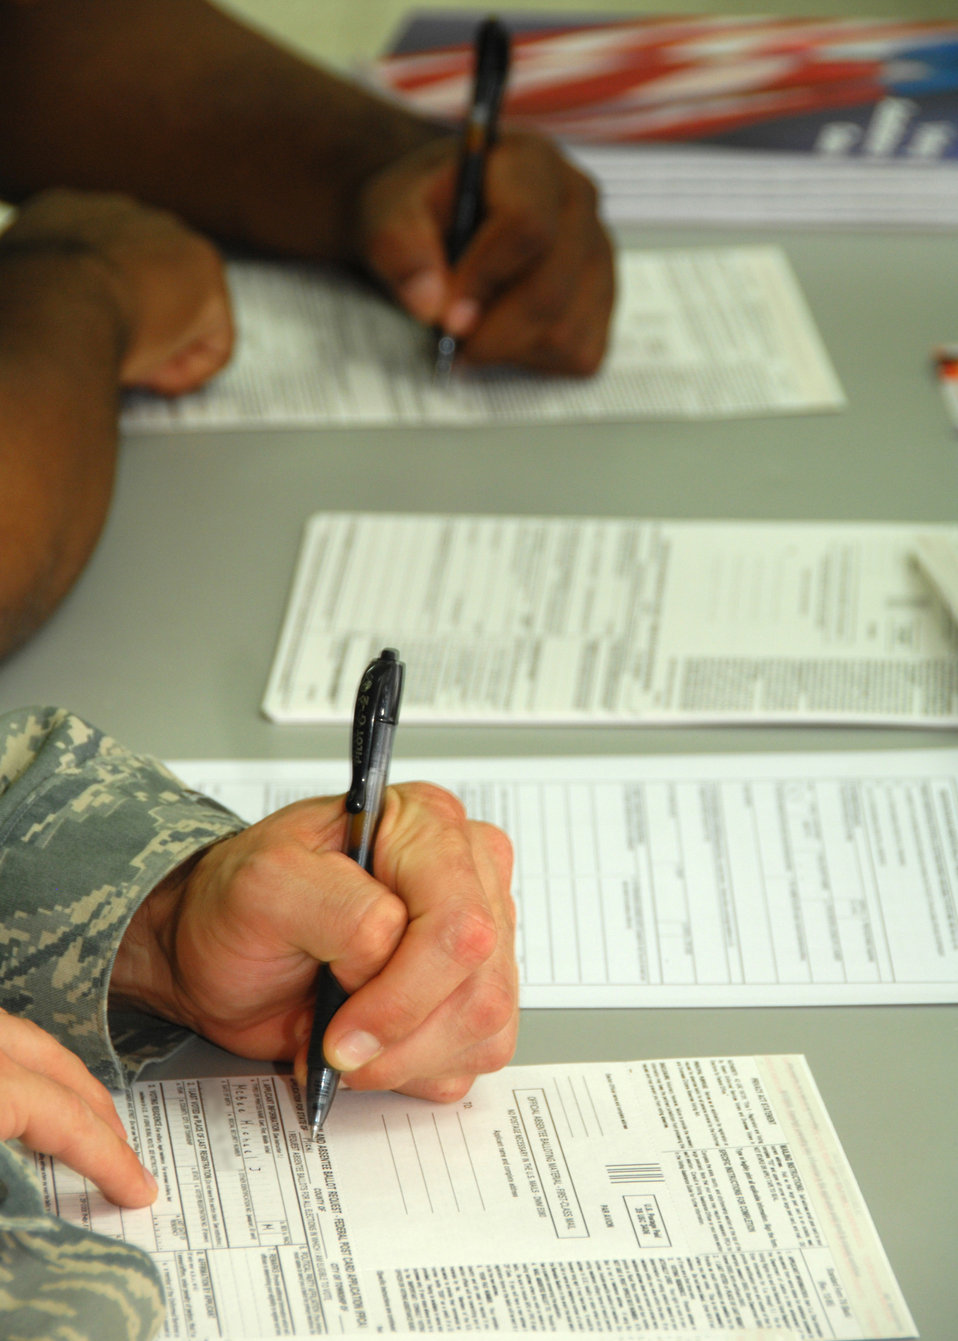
Every vote counts

Army Private 1st Class Chris Williams (top) and Airman 1st Class Michael McBee register to vote Aug. 13 at an air base in Southwest Asia. Officials with the 386th Air Expeditionary Wing held a base-wide voter registration and absentee ballot drive to increase servicemember participation in November's general election. More than 100 people signed up to become registered voters.